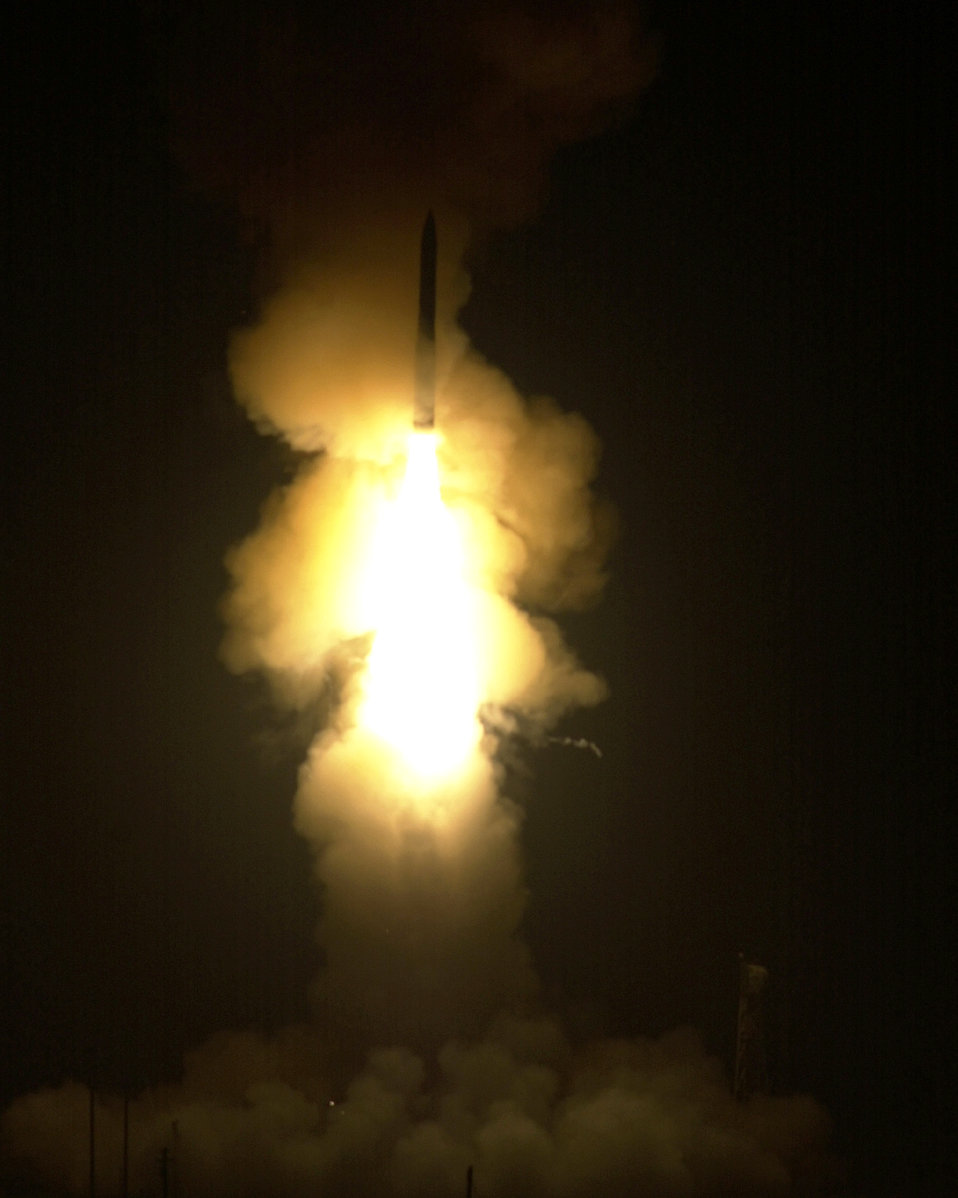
Minuteman III launch successful

An unarmed Minuteman III intercontinental ballistic missile launches from Vandenberg Air Force Base, Calif., on Wednesday, June 14.